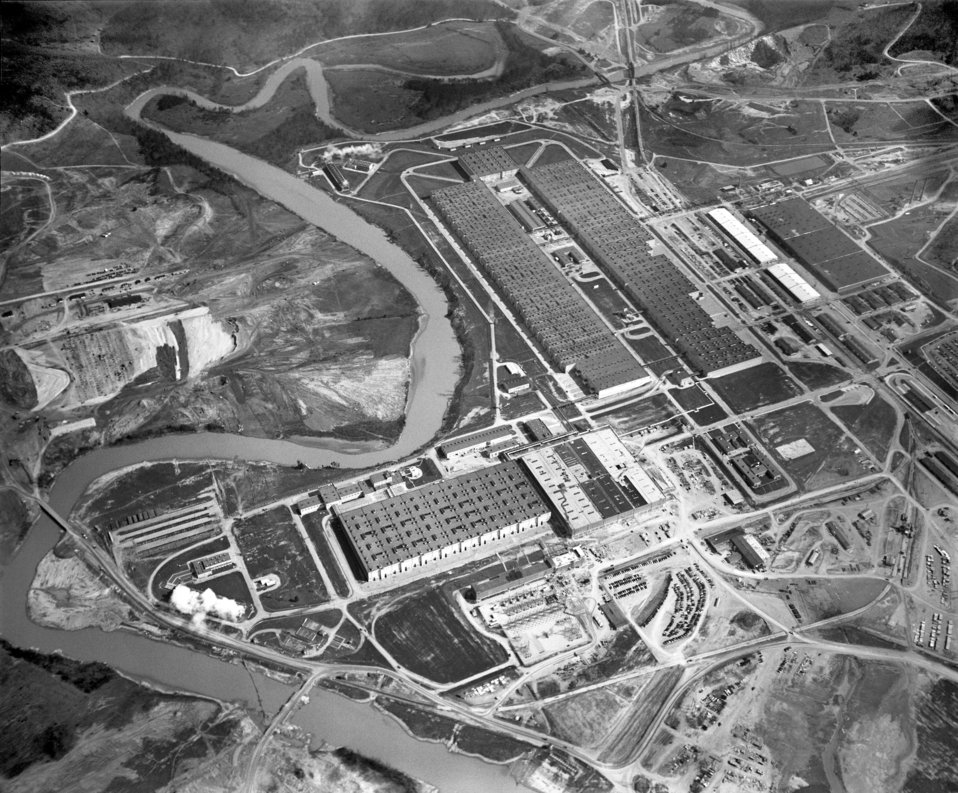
Air View K-25 General 1950 Oak Ridge

5901 DOE photo Ed Westcott 4-6-1950 Oak Ridge Tennessee